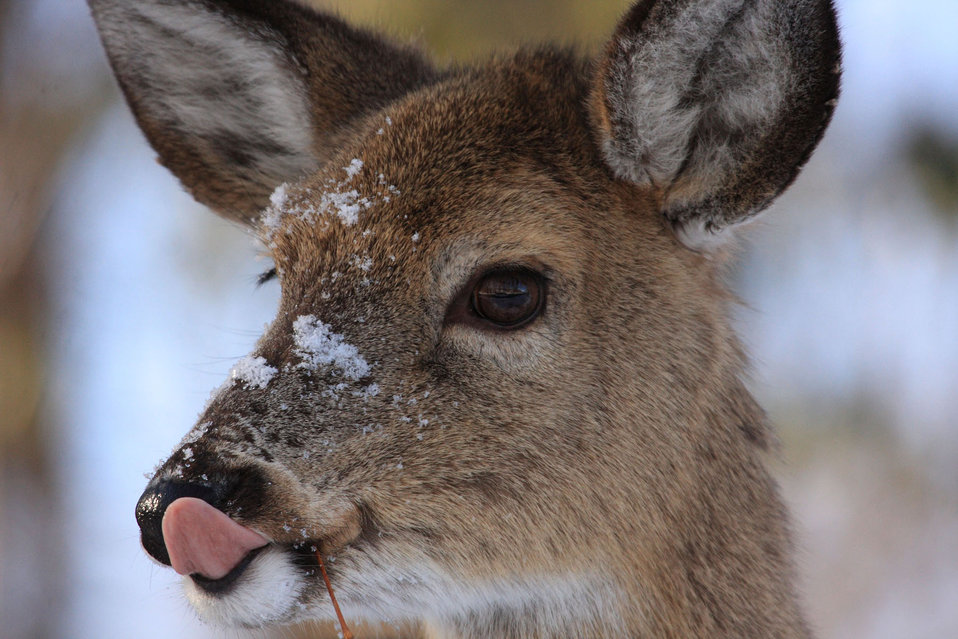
Deer with snow on nose

Deer at John Heinz National Wildlife Refuge in Philadelphia, Pennsylvania.